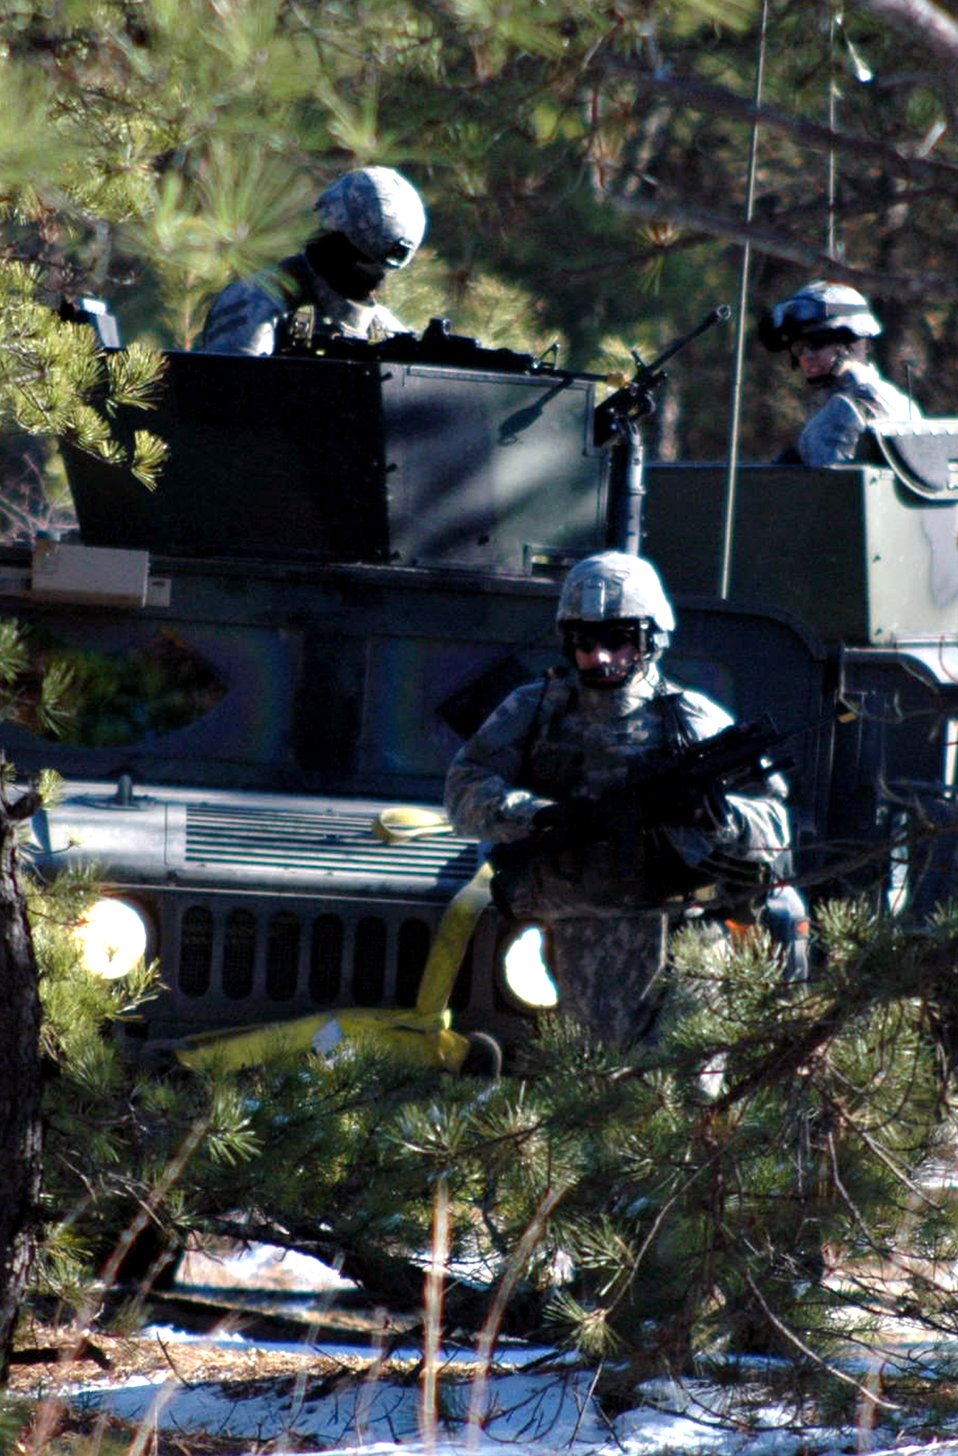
Air Force tactical security element training

Security forces students in the tactical security element training course prepare for a mounted patrol (convoy) scenario during training on a range on Fort Dix, N.J. The course, held in early December, was the first of its kind by the U.S. Air Force Expeditionary Center at Fort Dix. Taught by instructors from the Air Force Office of Special Investigations and a security forces cadre from the center's 421st Combat Training Squadron, the training is designed to prepare security forces for